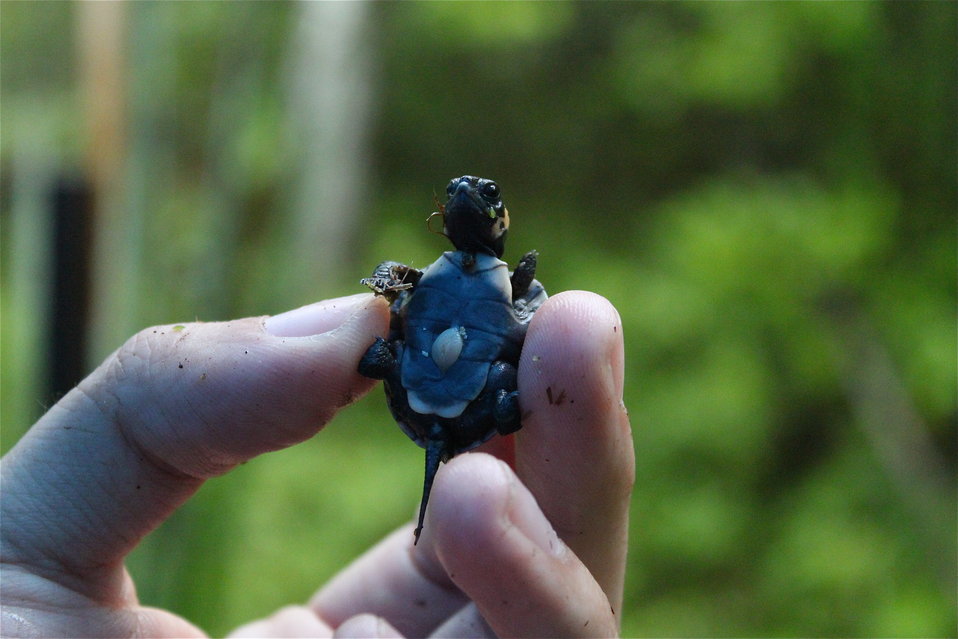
Photo of the Week - Newly hatched bog turtle

Photo of the Week - 08/24/2010

A newly hatched bog turtle in northern New Jersey with yolk sac still attached.

Credit: Rosie Walunas/USFWS

The bog turtle was federally listed as a threatened species in 1997. The greatest threats to the bog turtle are the loss, degradation, and fragmentation of its habitat from wetland alteration, development, pollution, invasive species, and natural vegetational succession. The species is also threatened by collection for illegal wildlife trade.